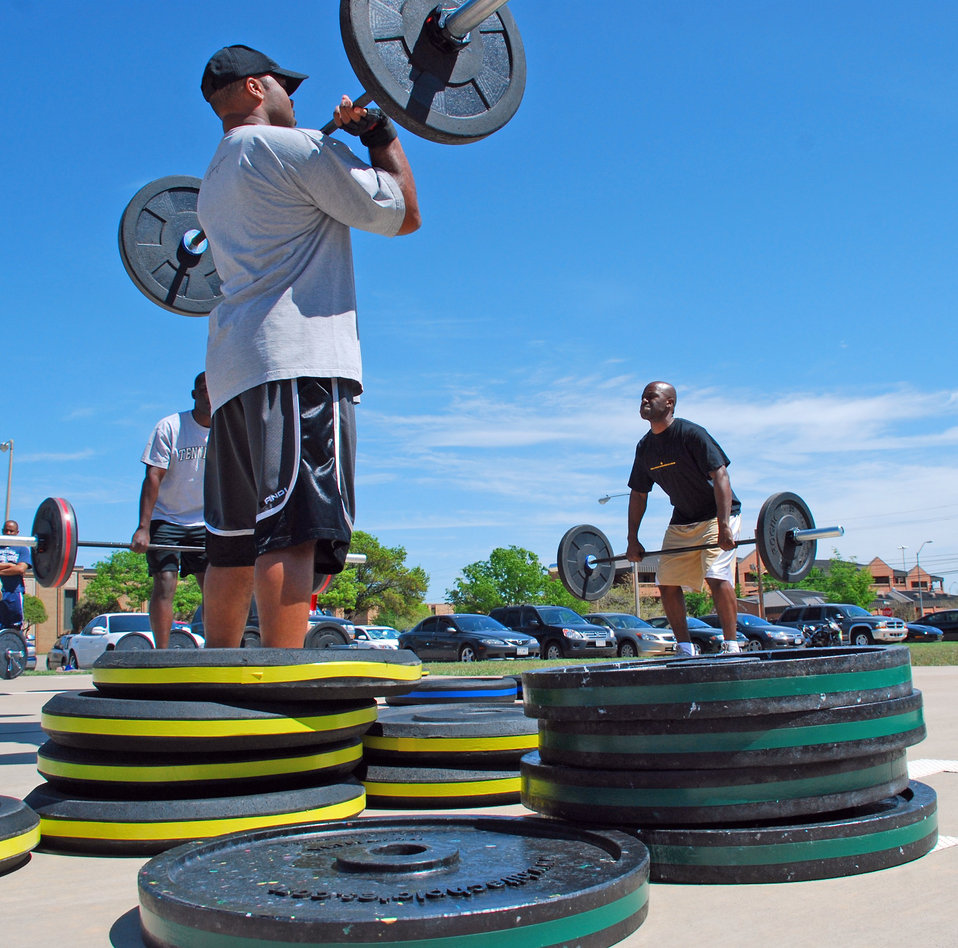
Combat Fitness

People at Sheppard Air Force Base, Texas, practice Olympic-style weight lifting April 9, 2010, during a workout that is part of the Combat Fit program offered by the Health and Wellness Center there. Combat Fit participants perform weight lifting, cardio workouts, plyometrics and other types of exercises to improve combat readiness.